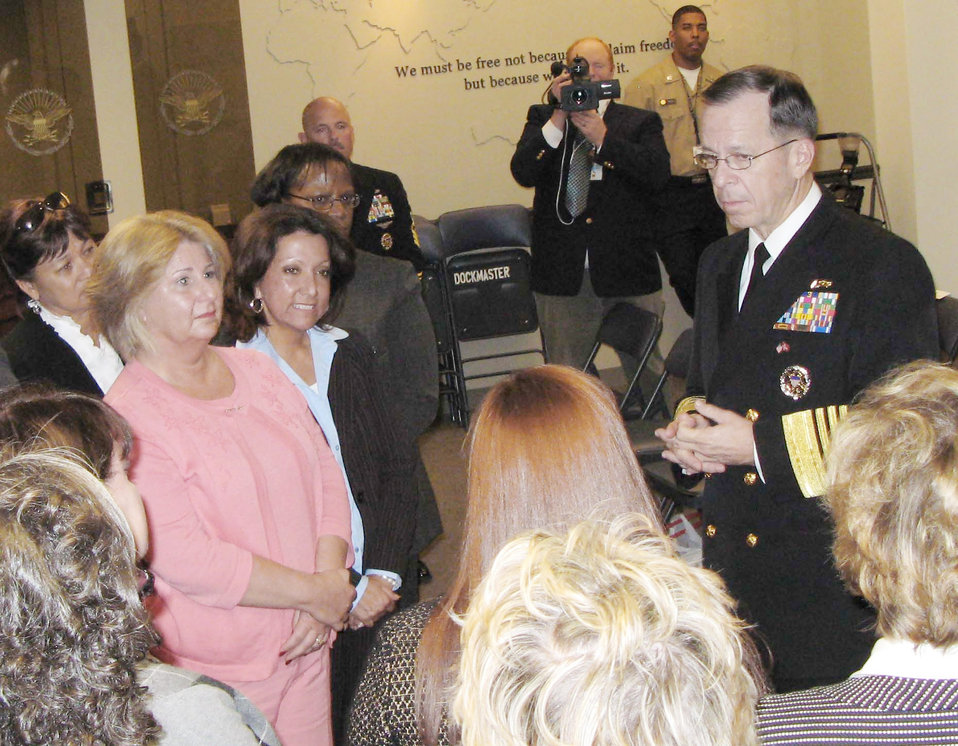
DOD's top teachers

Adm. Mike Mullen, chairman of the Joint Chiefs of Staff, greets the Department of Defense?s top teachers for 2010 during a Nov. 17, 2009, Pentagon recognition ceremony. Thirteen teachers who work for the worldwide Department of Defense Education Activity school system were recognized.